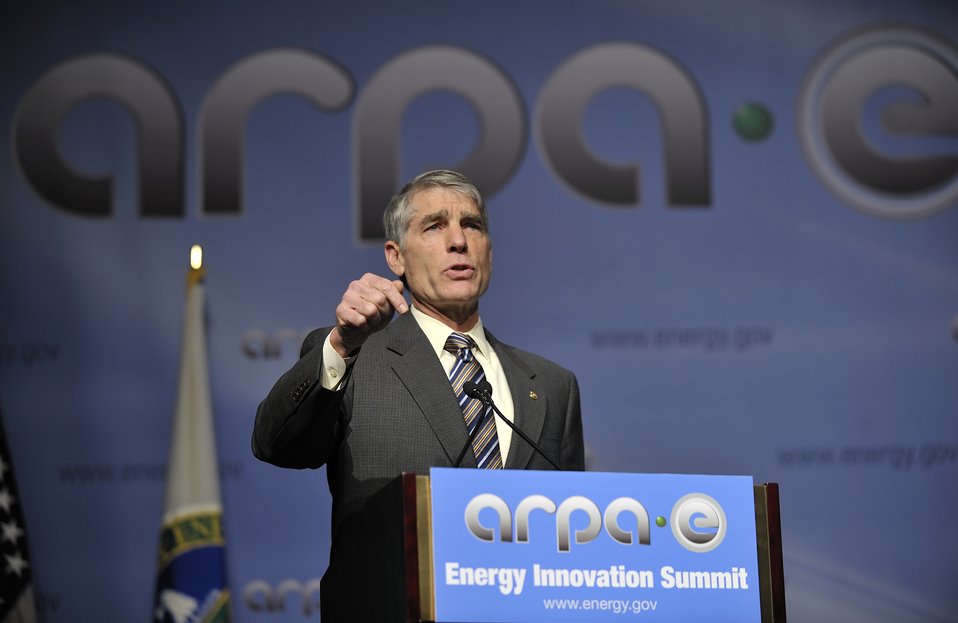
ARPA-E Energy Innovation Summit 2011, 31 of 83

Senator Mark Udall (D-CO)